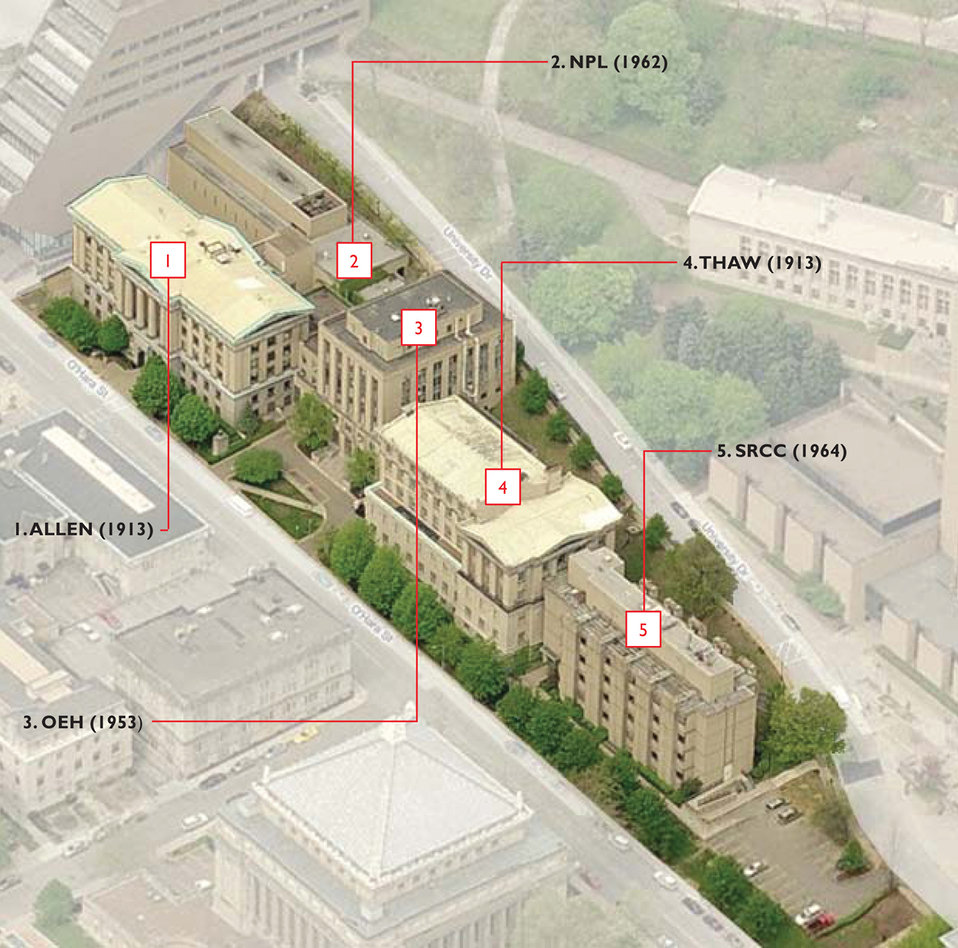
Recovery Act Grant; Pittsburgh

The University of Pittsburgh's Mid-Campus Complex which houses the Department of Physics and Astronomy.